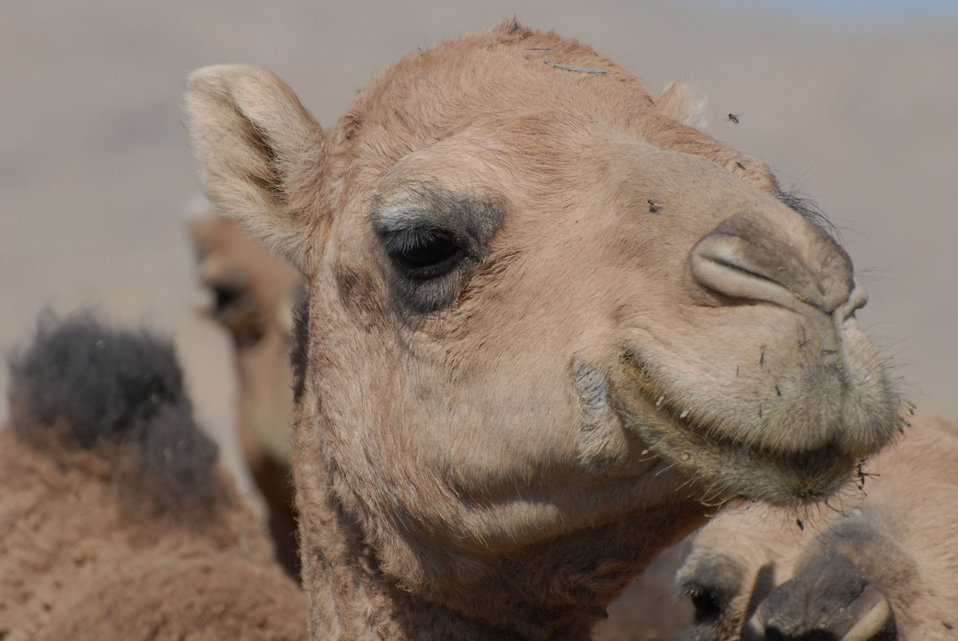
'On the Road' in Kandahar